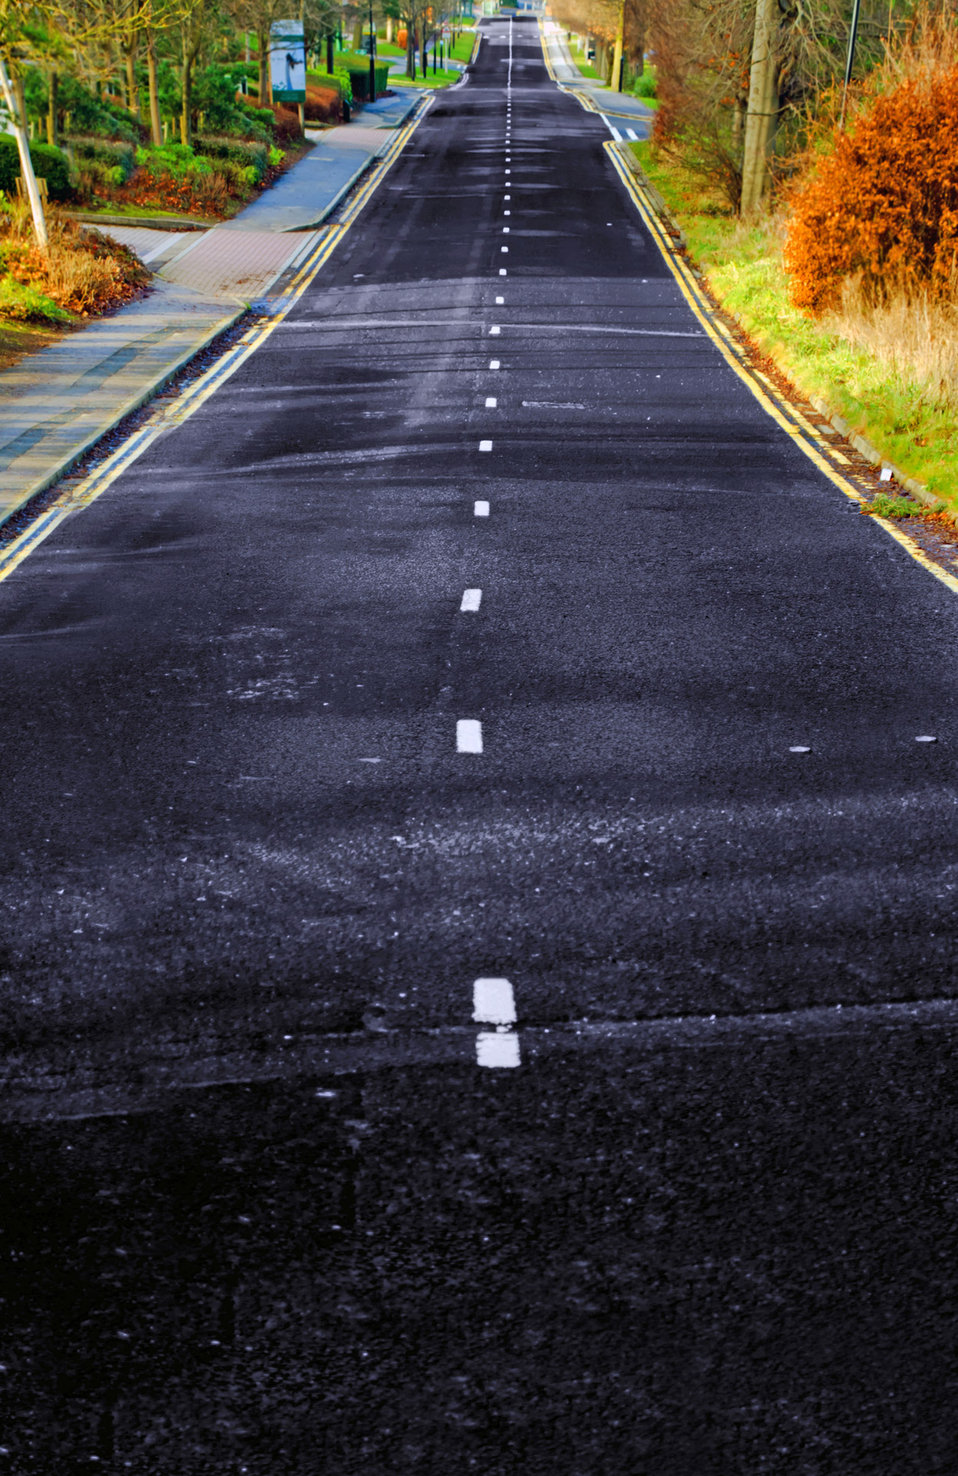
Road - wallpaper.